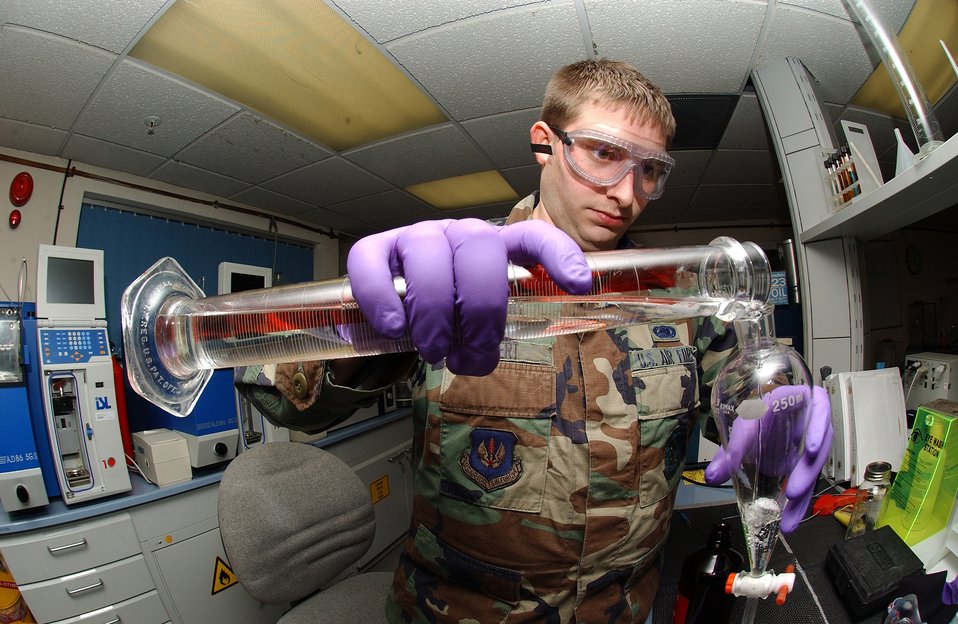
Fuel mixing

ROYAL AIR FORCE MILDENHALL, England (AFPN) -- Staff Sgt. Jonathan Seifert mixes JP-8 fuel while performing a fuels system icing inhibitor test Feb. 10. Sergeant Seifert is with the 100th Logistics Readiness Squadron. Tests are conducted two to three times a week to prevent fuel from icing.